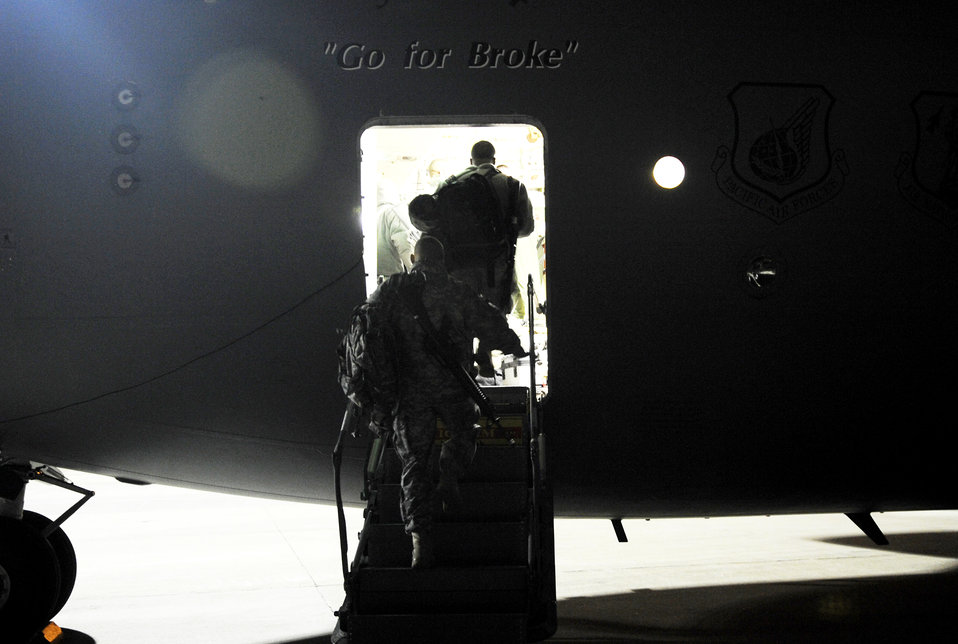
Airmen, Soldiers continue delivering troops, aid to Haiti

Servicemembers board a C-17 Globemaster III Feb. 8, 2010, at Langley Air Force Base, Va. Through a joint effort by Soldiers and Airmen from Joint Base Langley-Eustis, servicemembers and cargo are transported to Haiti as part of Operation Unified Response.